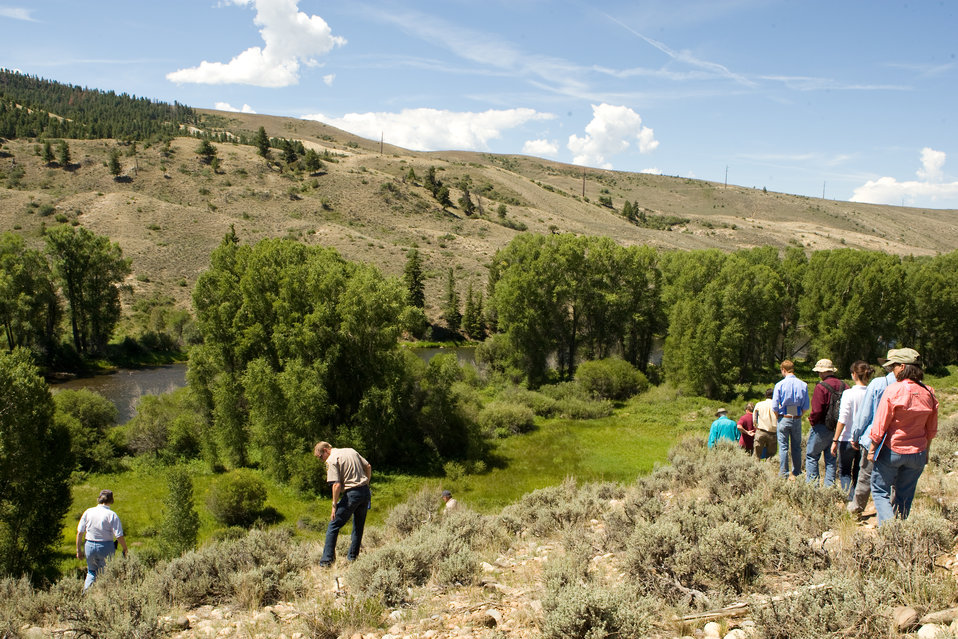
Colorado Rare Plant Conservation Initiative

The Colorado Rare Plant Conservation Initiative (RPCI) is a partnership of 23 statewide and regional agencies, private organizations, and academic institutions working to conserve 121 rare plants in Colorado. As part of these efforts the group developed the Colorado Rare Plant Conservation Strategy, developed Best Management Practices to reduce energy development impacts, addressed climate change, and developed focused strategies for the conservation of individual species at eight priority landscapes. The group has also worked to coordinate volunteer efforts for plant conservation across the state.